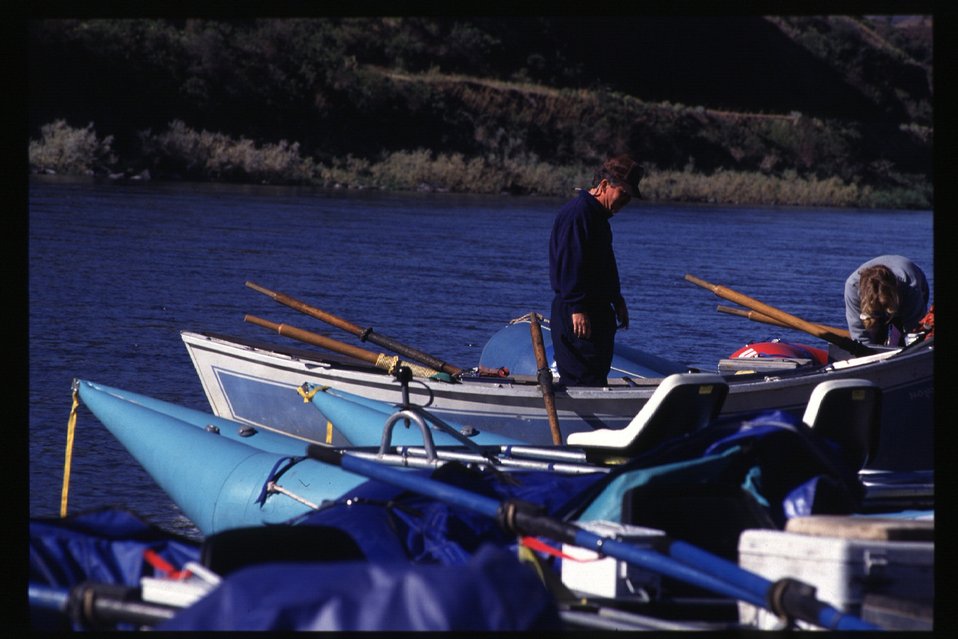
River Rangers Rafts an dorys Lower Salmon River Cottonwood Field Office UCSC Upper Columbia Salmon Clearwater District